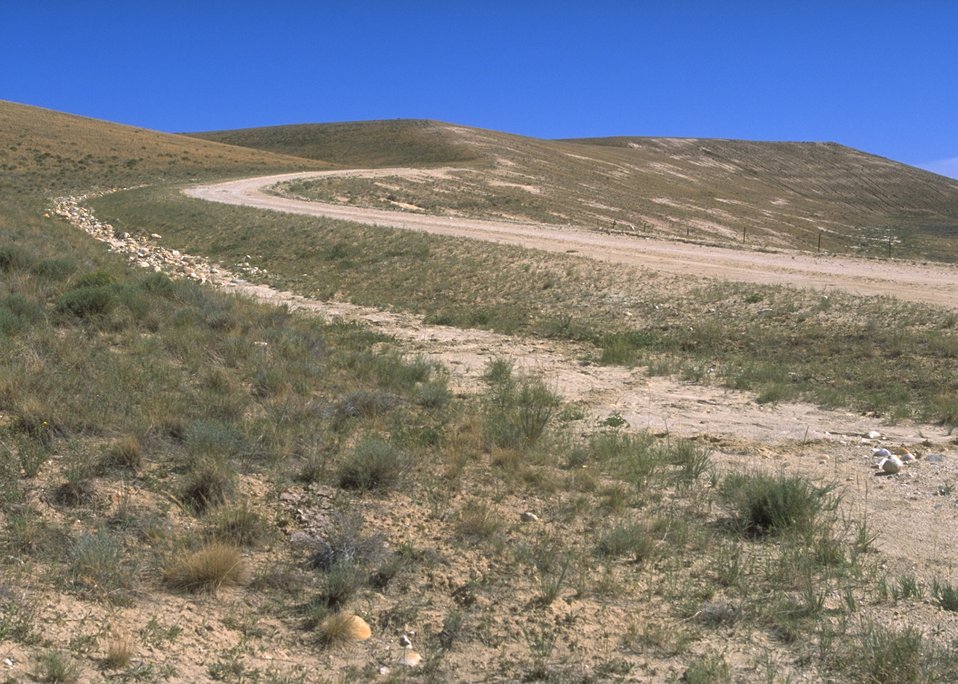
Gas Hill Abandoned Mine Lands in various stages of rehabilitation, Lander Field Office.